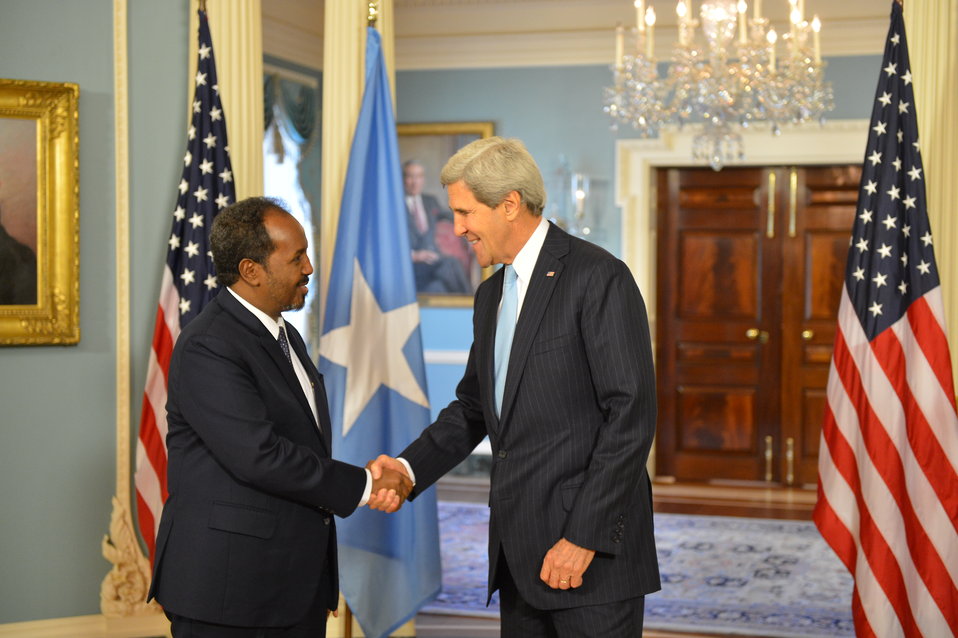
Secretary Kerry Shakes Hands With Somali President Hassan Sheikh Mohamud

U.S. Secretary of State John Kerry shakes hands with Somali President Hassan Sheikh Mohamud after addressing reporters at the U.S. Department of State in Washington, D.C., on September 20, 2013.